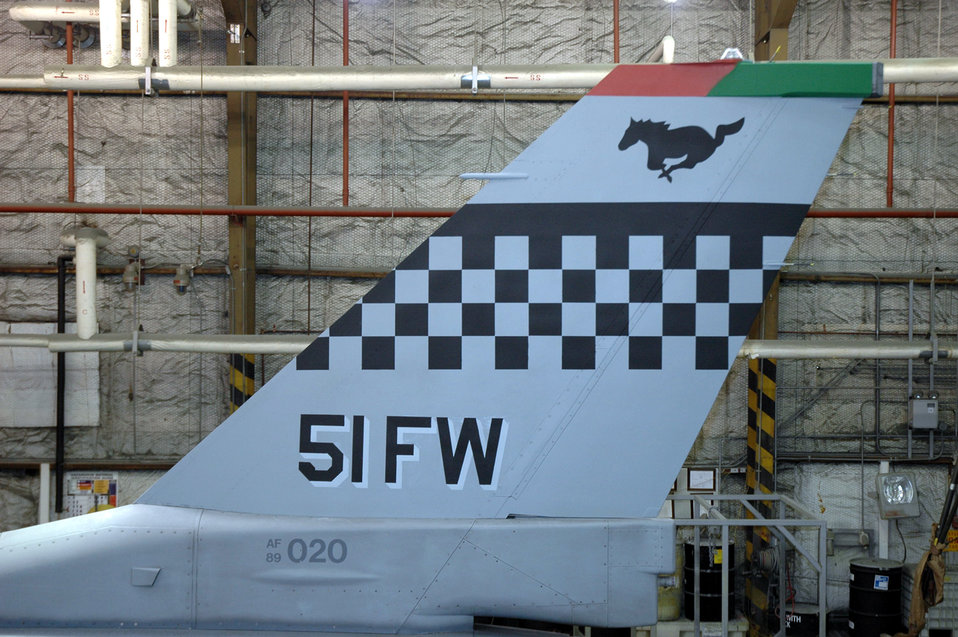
Heritage tail flash

The new heritage tailflash with the